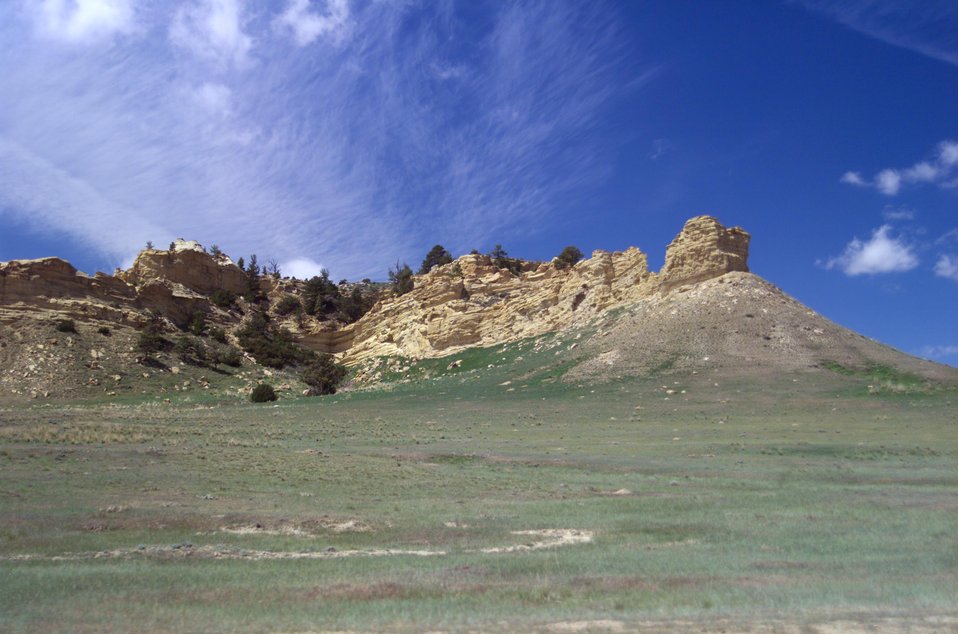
Hills surround Naval Petroleum Reserve NO.3(NPR-3) near Casper, Wyoming.

The Rocky Mountain Oilfield Testing Center (RMOTC) is a Department of Energy field test site for emerging and developing technologies to address critical energy issues. The field test site, located on Naval Petroleum Reserve No.3 (NPR-3), is a 10,000-acre site. There are approximately 700 well bores with 600 producing wells ranging in depth from 500 to 5,000 feet.